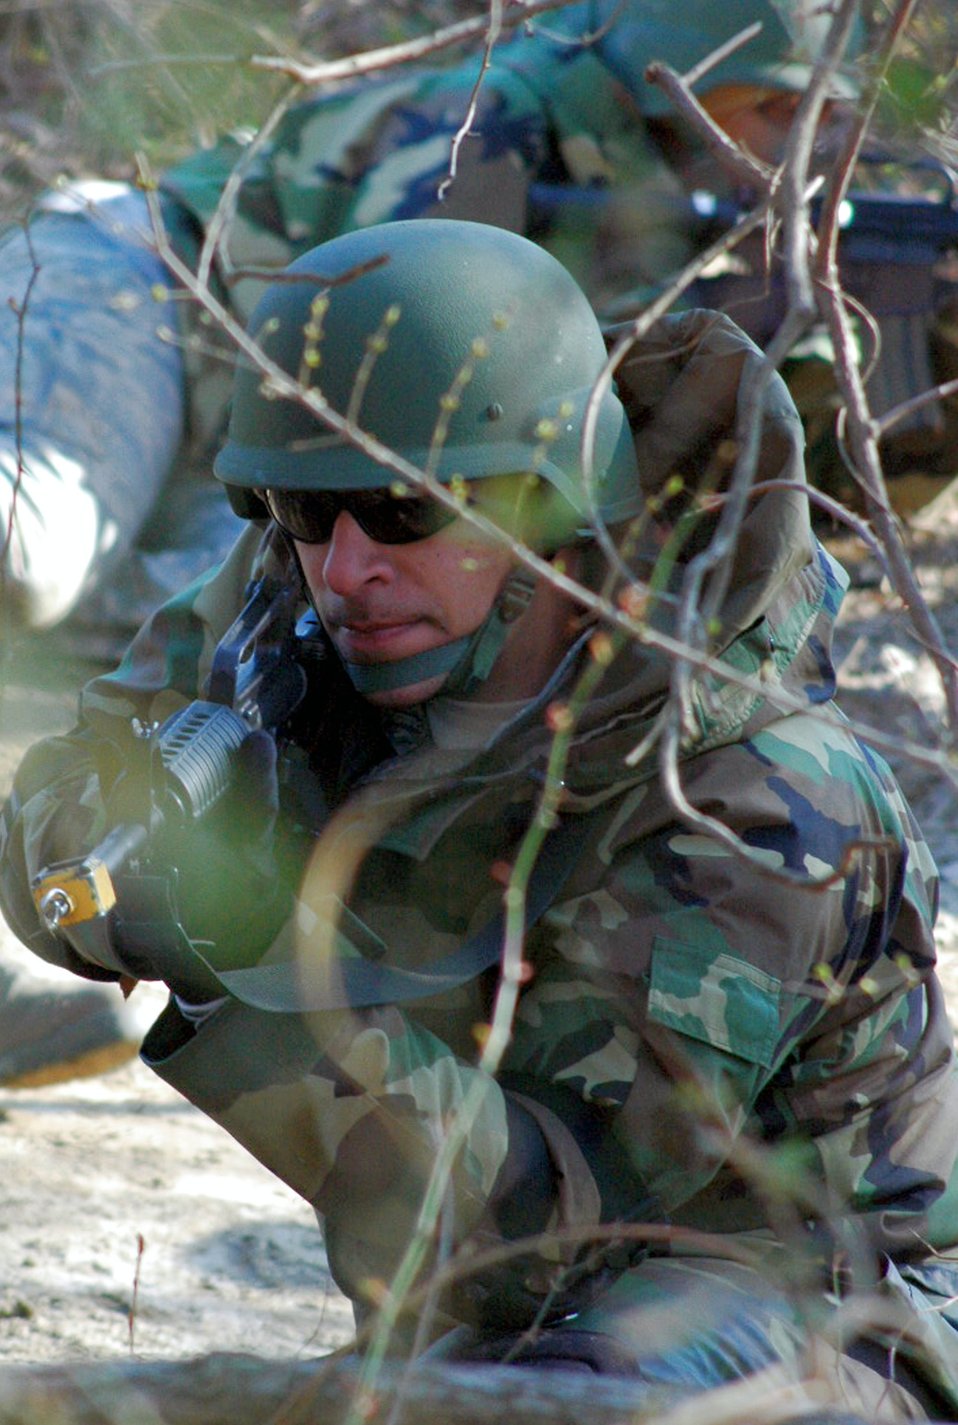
Airmen complete first Air Advisor Course

Staff Sgt. Saul Bookman and other students go through the combat first aid obstacle course Feb. 29 on a range on Fort Dix, N.J. Taught by Expeditionary Operations School officials, Air Force Expeditionary Center's Air Advisor Course 08-1 prepares Airmen deploying to Afghanistan and Iraq who will in turn be training military forces in those countries. Sergeant Bookman is from Lackland Air Force Base, Texas.